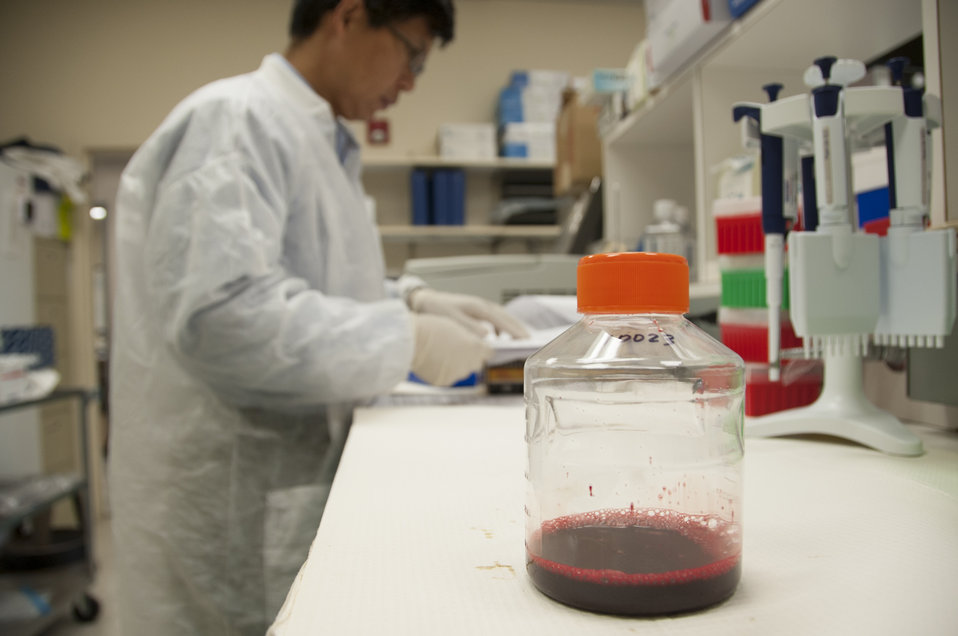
Blood Research: Saving Lives (8455)

Jason Liu, Ph.D., a laboratory chief at FDA’s Office of Blood Research and Review, verifies that standard operating procedures have been followed. FDA is responsible for the safety of our nation’s blood supply and is at the forefront of evaluating and encouraging innovative technologies for protecting it.

Read this Consumer Update to learn more: Advances in Saving Lives with Blood